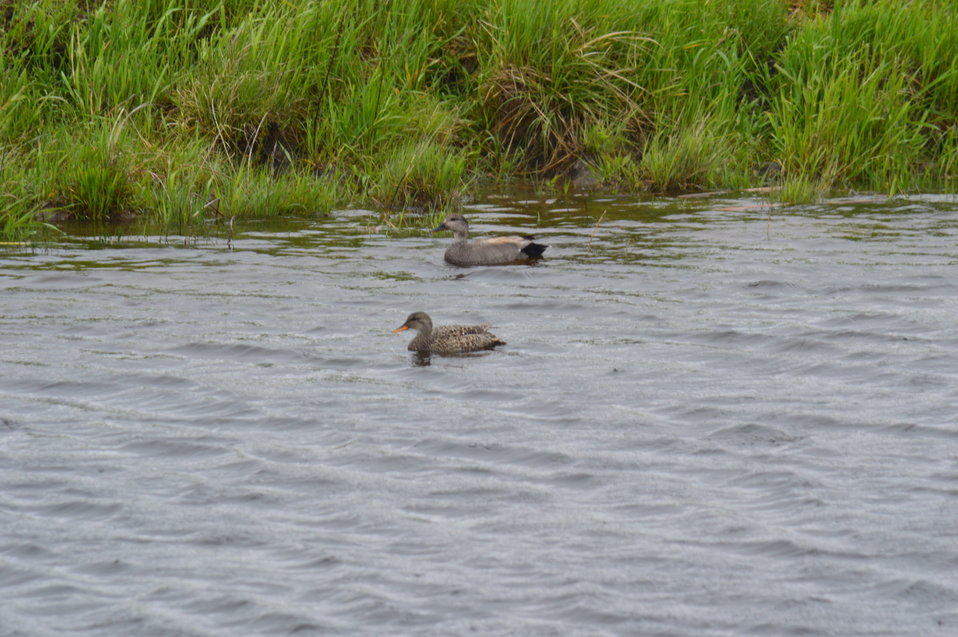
Waterfowl

Scenery and wildlife and Audubon National Wildlife Refuge in North Dakota.